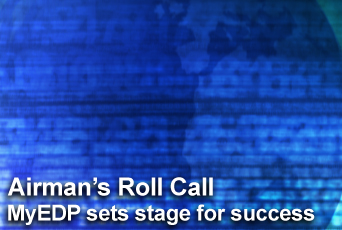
Airman's Roll Call: MyEDP sets stage for success

This week's Airman's Roll Call focuses on MyEDP, which stands for My Enlisted Development Plan, is a valuable online tool available through the Air Force Portal Website. It is designed to guide Airmen through their own careers and allow them to track the careers of those they supervise or mentor.